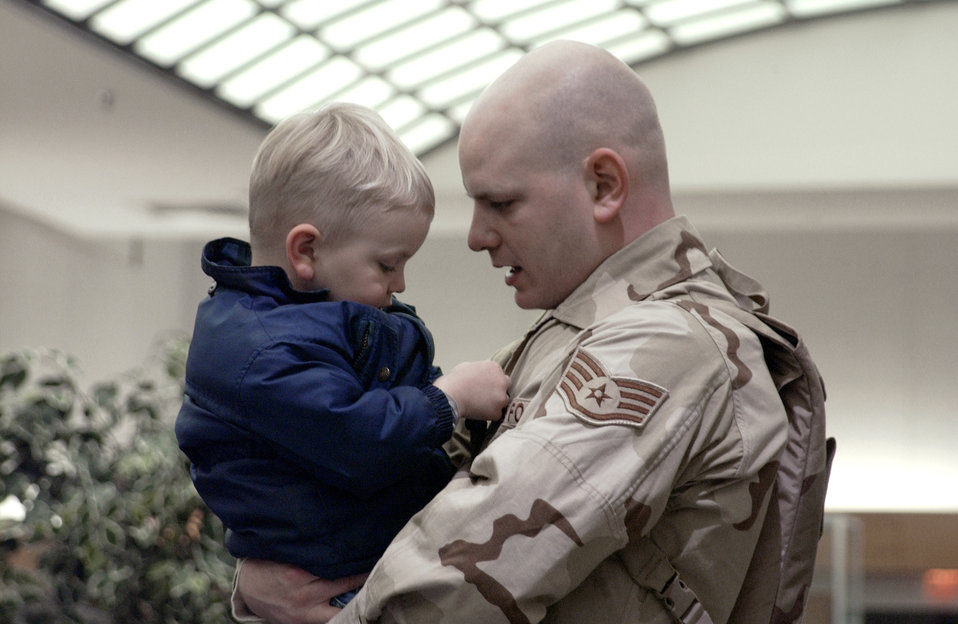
I'll miss you

OPERATION ENDURING FREEDOM -- Staff Sgt. Scott Berrier says farewell to his son before deploying from McGuire Air Force Base, N.J. Air Force officials are extending current and upcoming deployment rotation lengths to meet the needs of combatant commanders. Berrier is a force protection airman with the 621st Air Mobility Operations Group at McGuire.